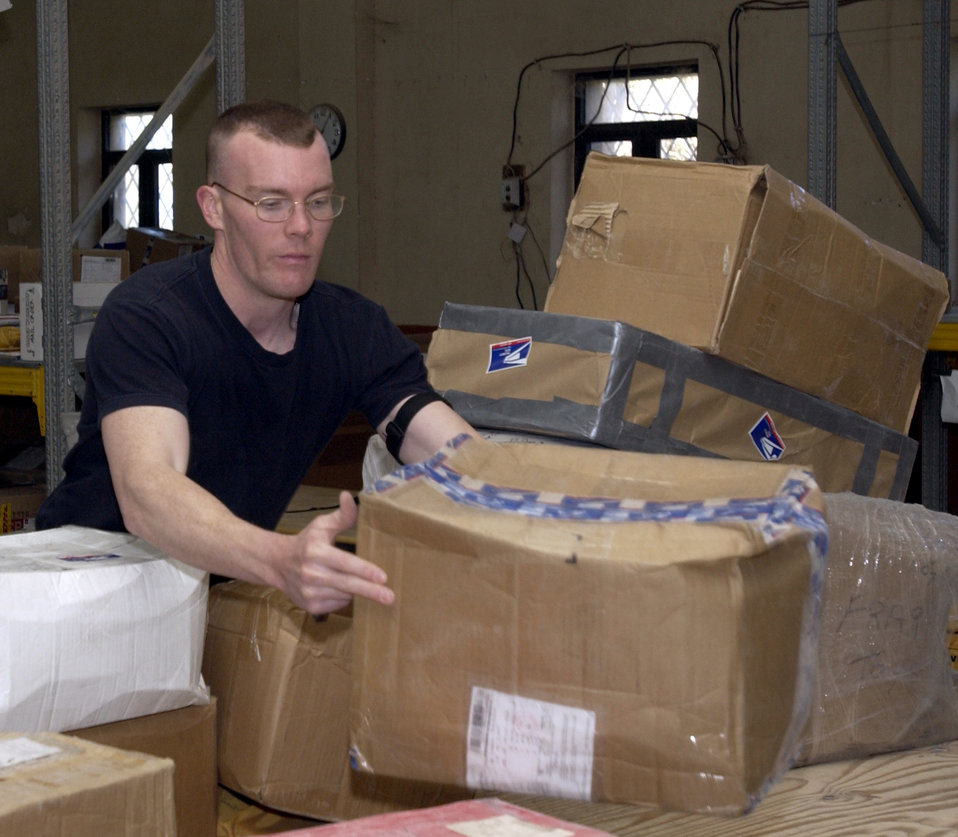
We've got mail!

KIRKUK AIR BASE, Iraq -- Senior Airman Troy Goercke, a postal worker, helps sort packages on one of four pallets delivered here March 15. Several volunteers turned out at the base post office to help unload the very large shipment of mail.